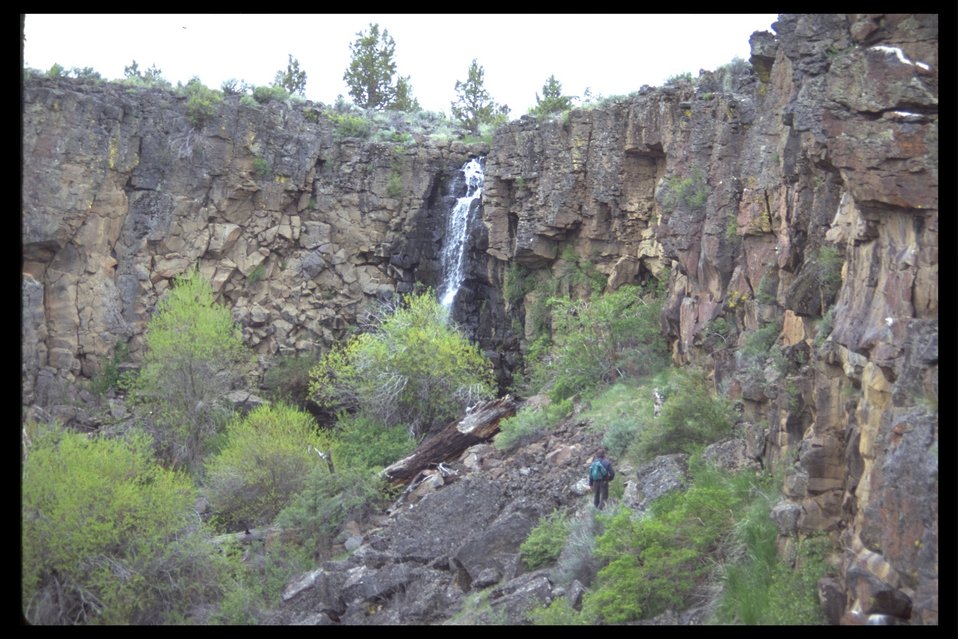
Waterfall on Rim Rock, north of Blue Bucket Creek in the Malheur/Blue Bucket area with Dave Vickstrom walking toward the waterfall. (WSA 2-14)